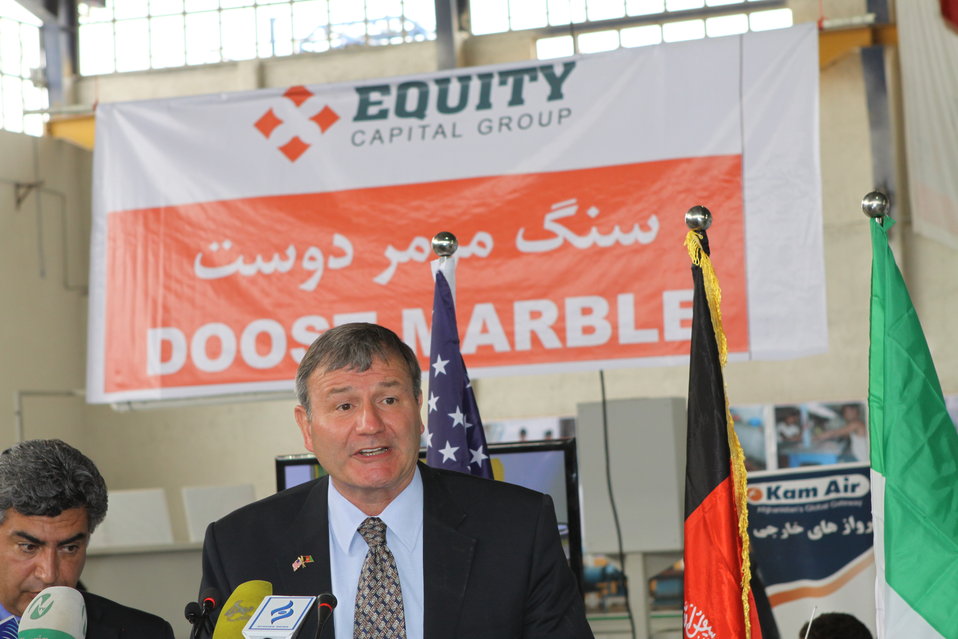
100525 Hirat Marble Conference 205